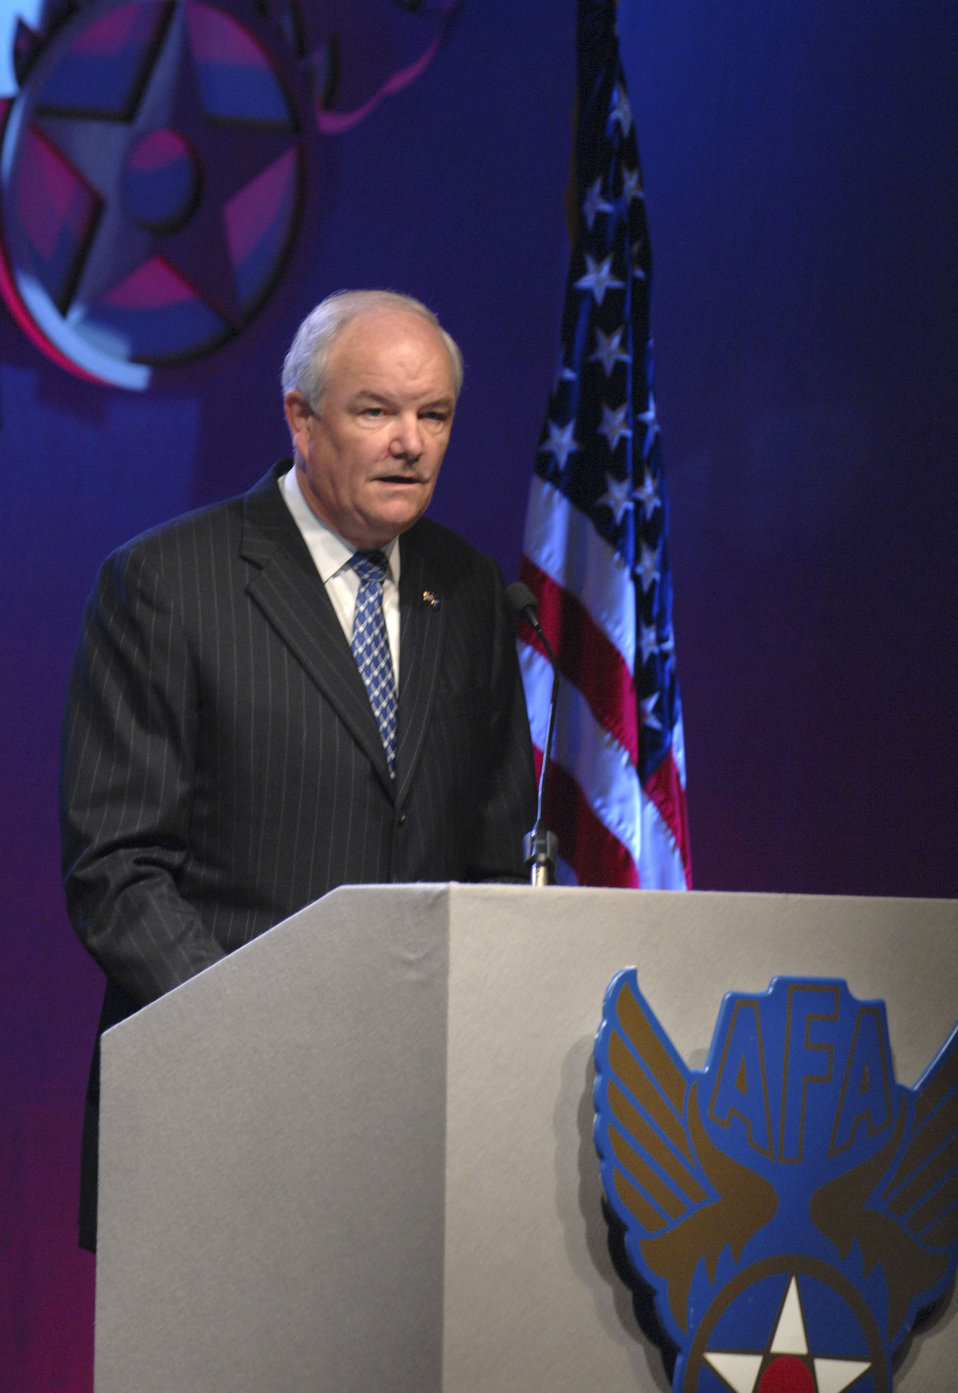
Air Force Association conference under way

Secretary of the Air Force Michael W. Wynne addresses the audience during his State of the Force remarks at the Air Force Association's Air & Space Conference and Technology Exposition on Sept 24 in Washington D.C. The conference will last for three days and will cover the newest technology and also have career enhancement seminars.